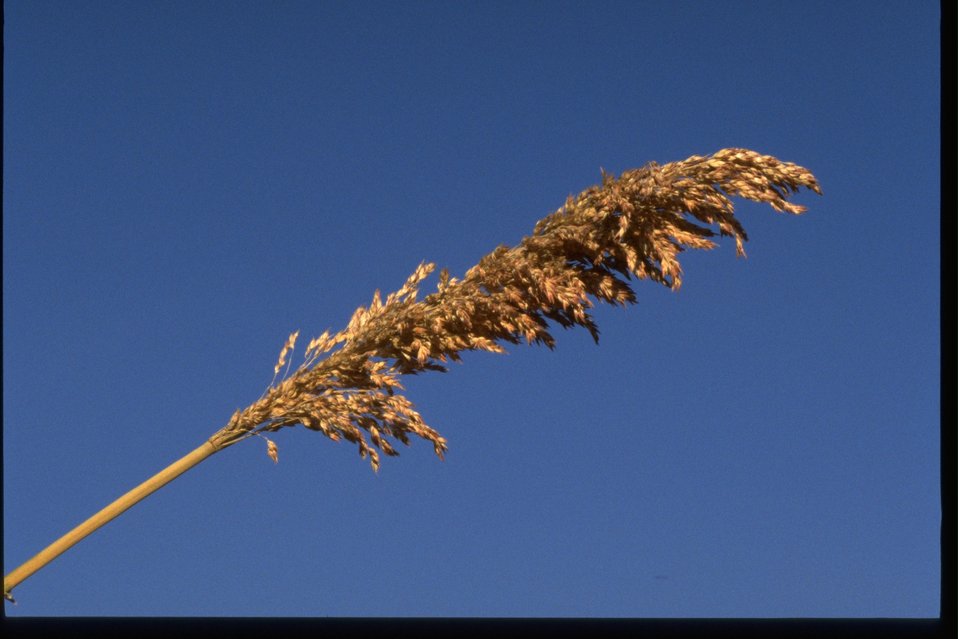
Milo seed head in John Day River area.